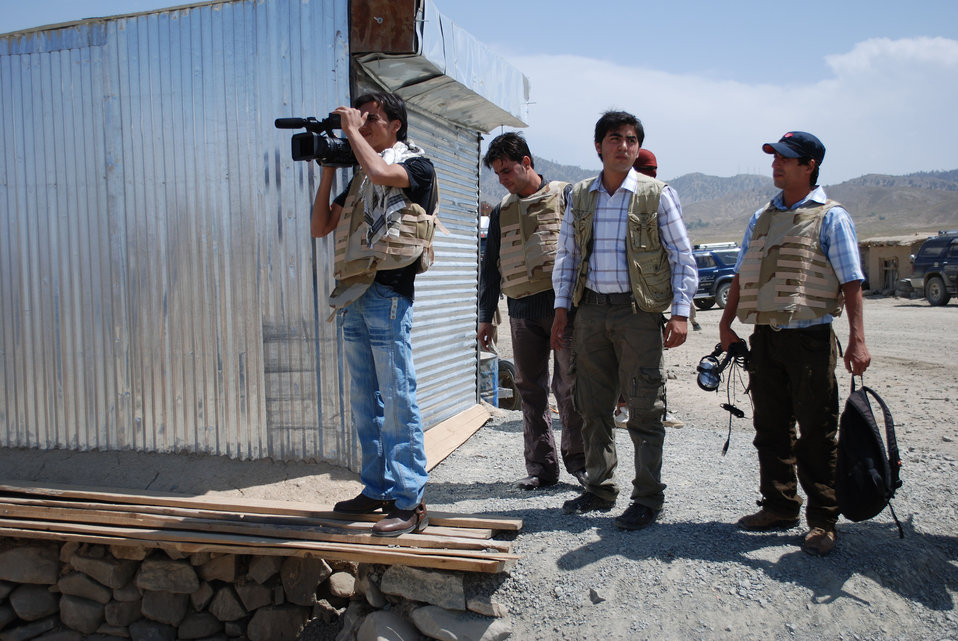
'On the Road' in Paktya Province